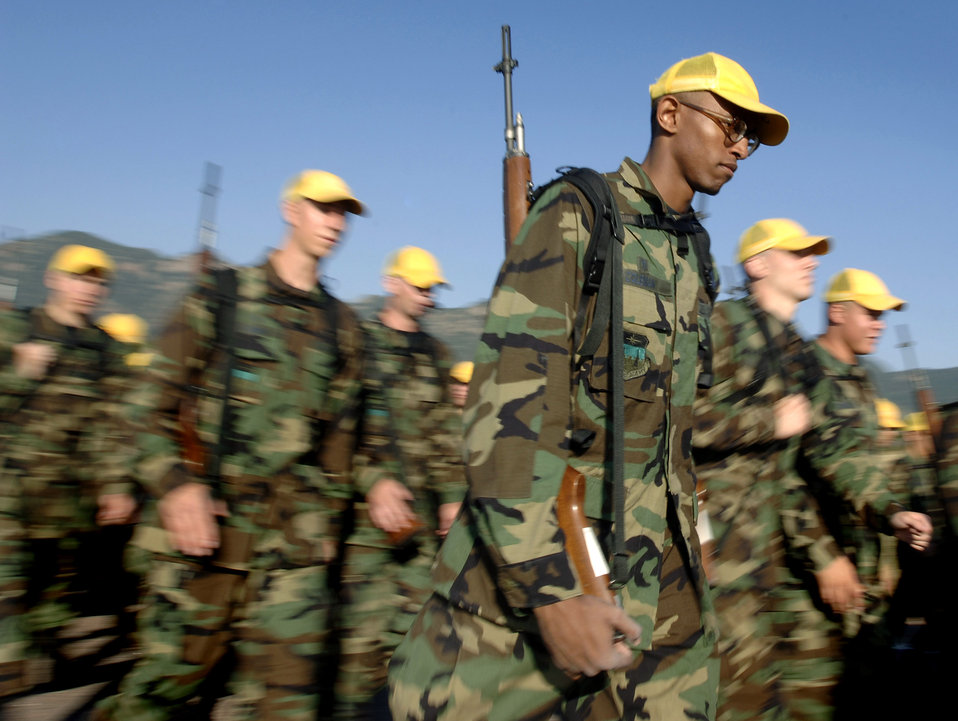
March on

Academy cadet trainees march to Jacks Valley July 16 as they begin two weeks of training that will test their stamina and determination. Included will be M-16 weapons training, confidence and bayonet assault training, drill evaluations, tent inspections and aerobic and physical fitness tests. Hefty meals under a circus-sized tent amounting to 4,500 calories a day will keep them going.